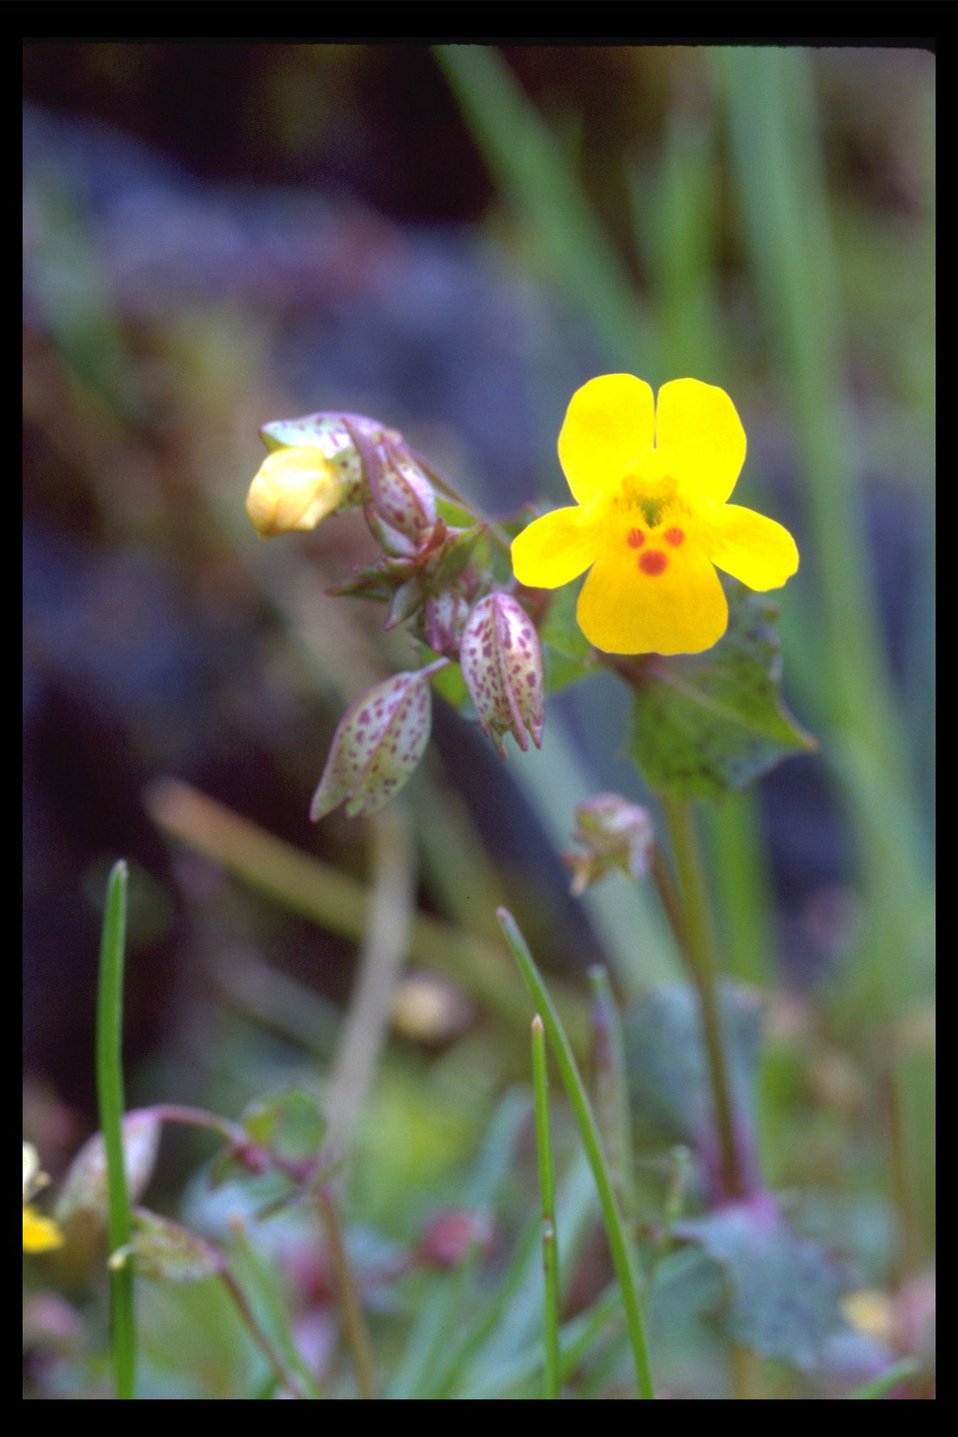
Close up of Chickweed Monkey Flower (Mimulus alsinoides) at Shady Cove.